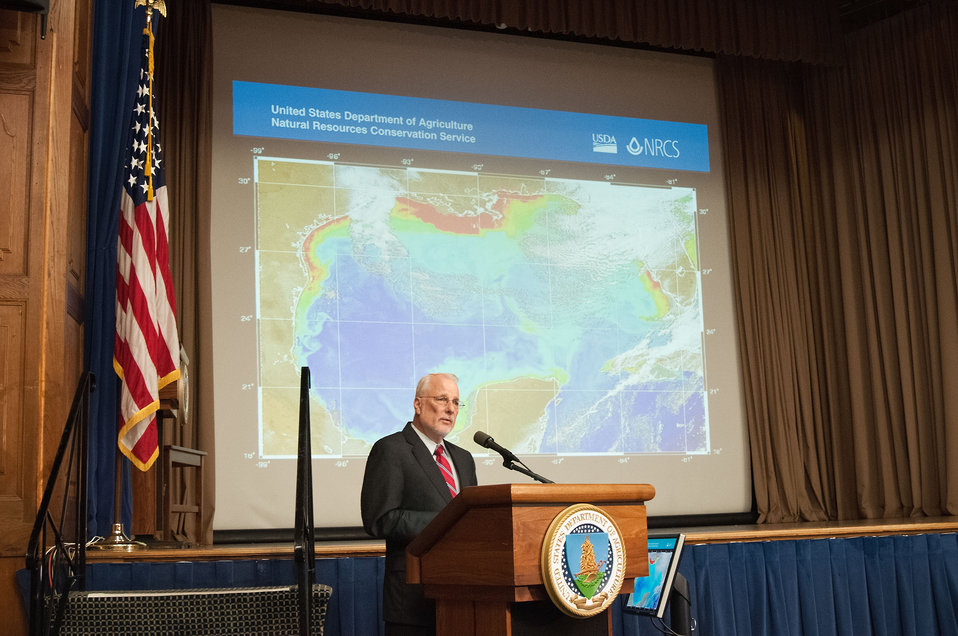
U.S. Department of Agriculture (USDA) Natural Resources Conservation Service (NRCS) Chief Dave White addresses the National Farmers Union at USDA in Washington, D.C. on Monday, Sept. 10, 2012.